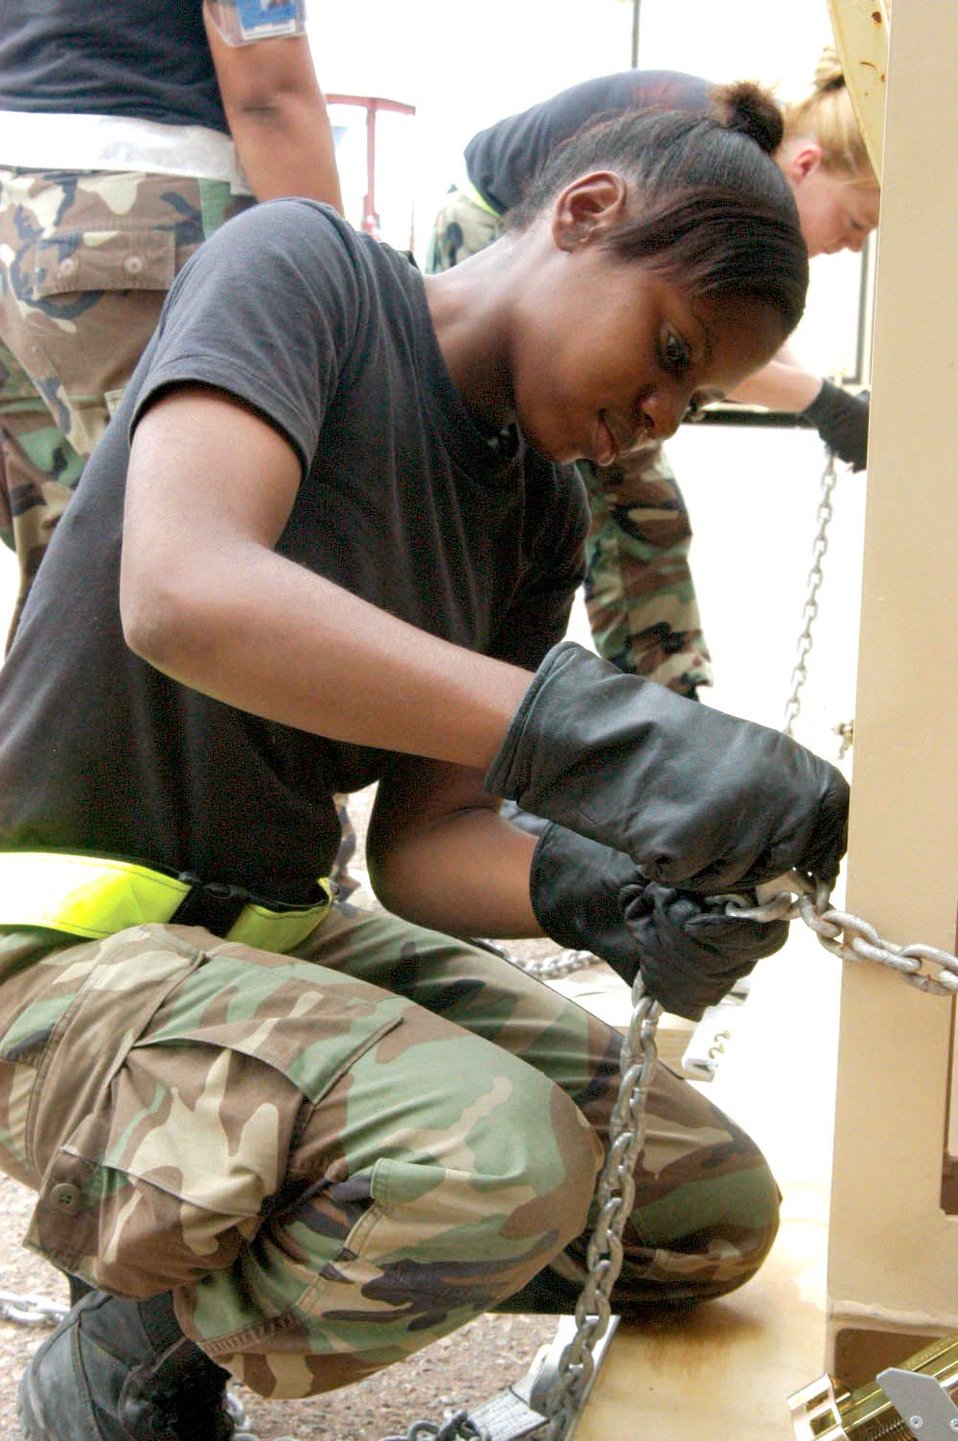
Hurricane relief

HOLLOMAN AIR FORCE BASE, N.M. -- Airman 1st Class Tracy Turner, 49th Materiel Support Squadron supply apprentice secures several hundred yards of electrical cable to a pallet with heavy chain. The cables are used to transmit electricity for lighting, air conditioning and other necessities in a tent city environment